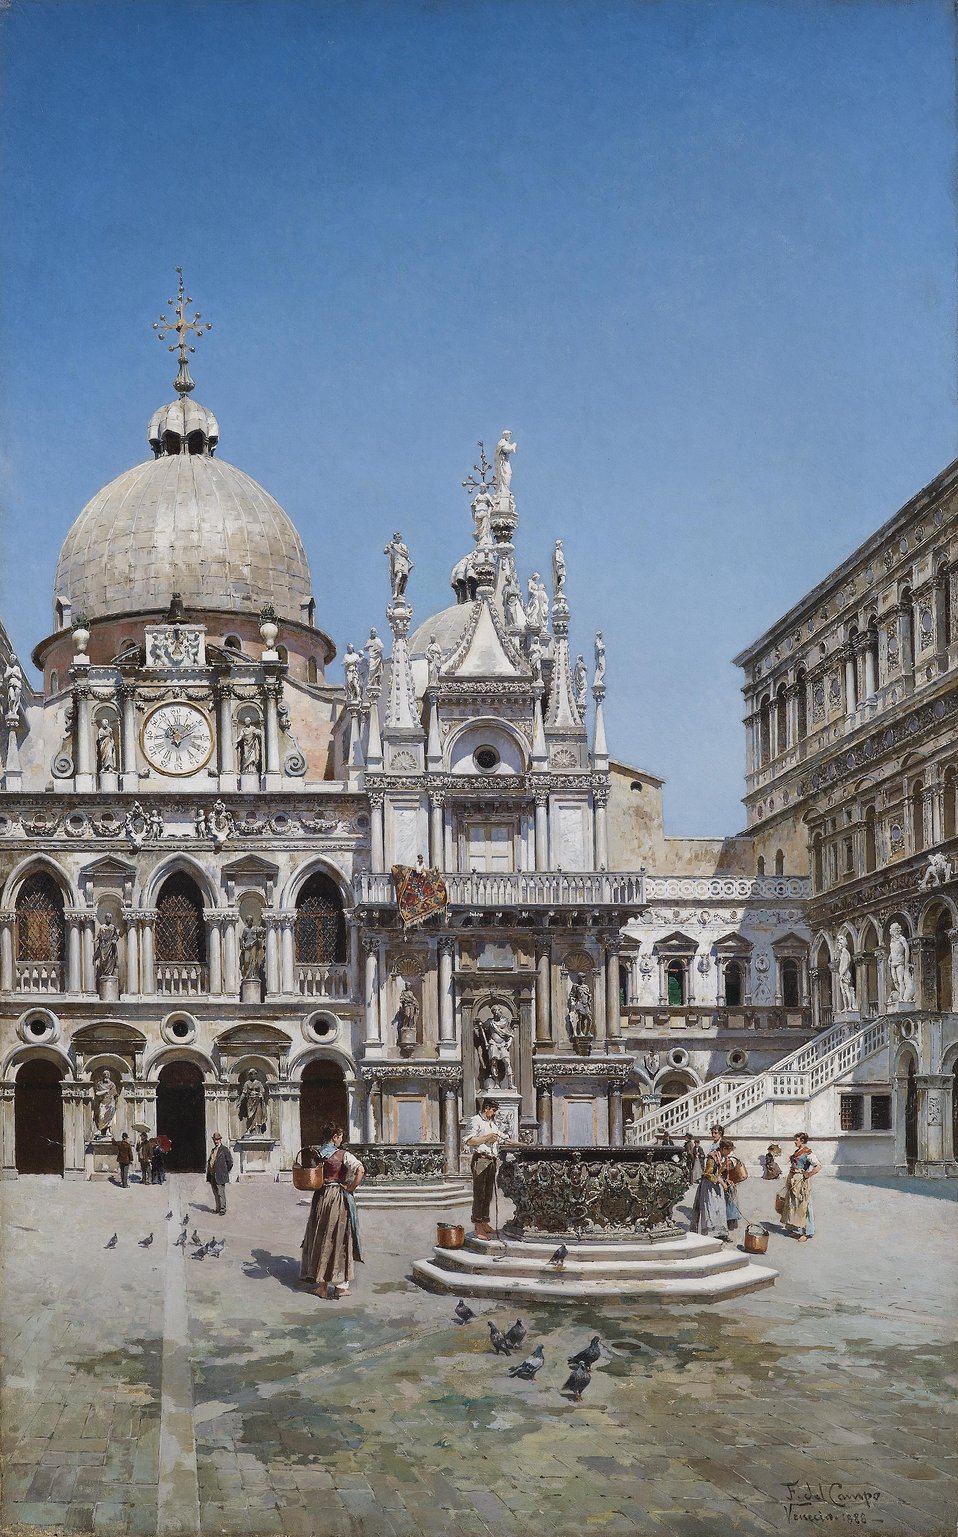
Innenhof des Palazzo Ducale in Venedig, signiert, bezeichnet und datiert F. del Campo Venezia 1888, Öl auf Leinwand,95 x 60 cm